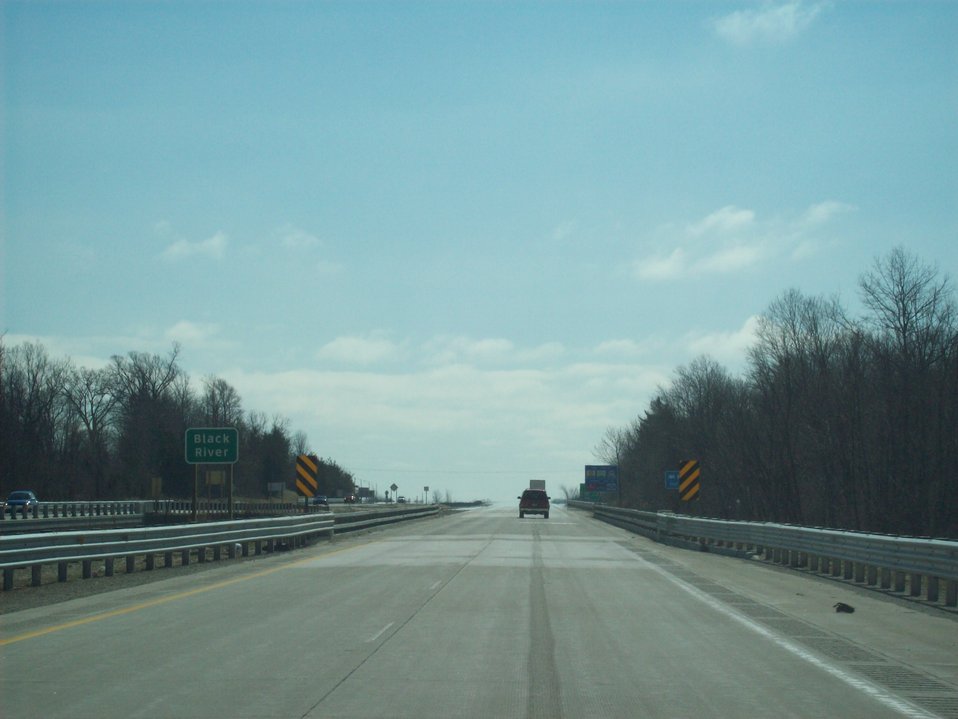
I-196 photo